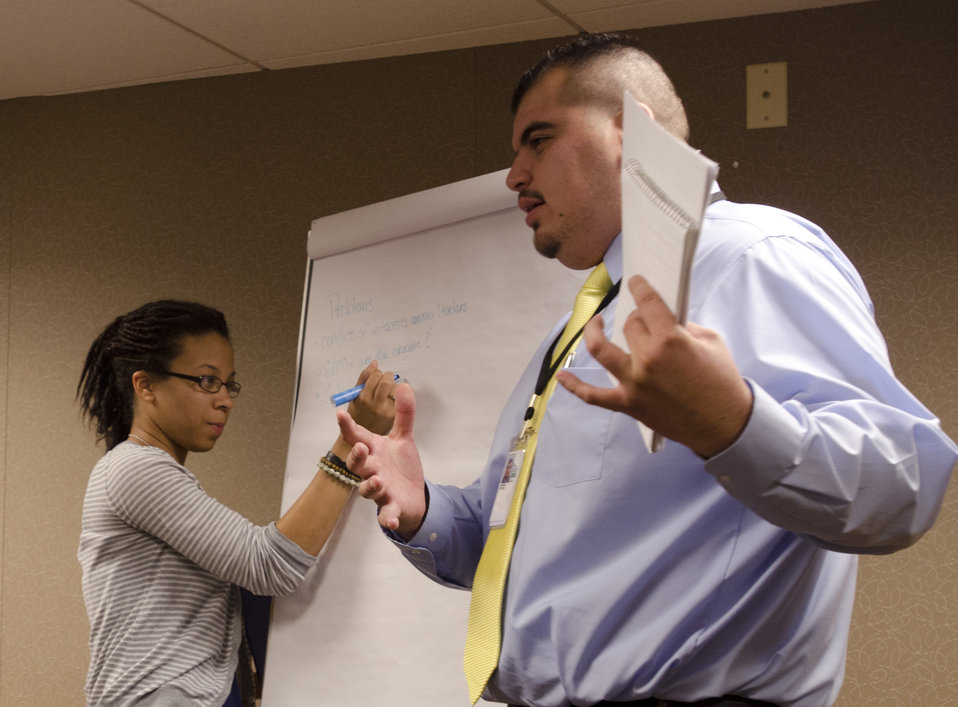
(L to R) U.S. Department of Agriculture (USDA) National Institute of Food and Agriculture (NIFA) intern Montia Medley and USDA National Agricultural Statistic Service (NASS) intern Victor Martinez present their group findings at the USDA Internship Program Listening in USDA’s South Building in Washington, D.C. on Monday, August 7, 2012. The purpose of the USDA Internship Program Listening Session is to provide interns with a forum to express their views about their experiences as a USDA intern. These young people will be among the most promising future USDA leaders and participate in an individual discussion and group session that will develop leadership skills.